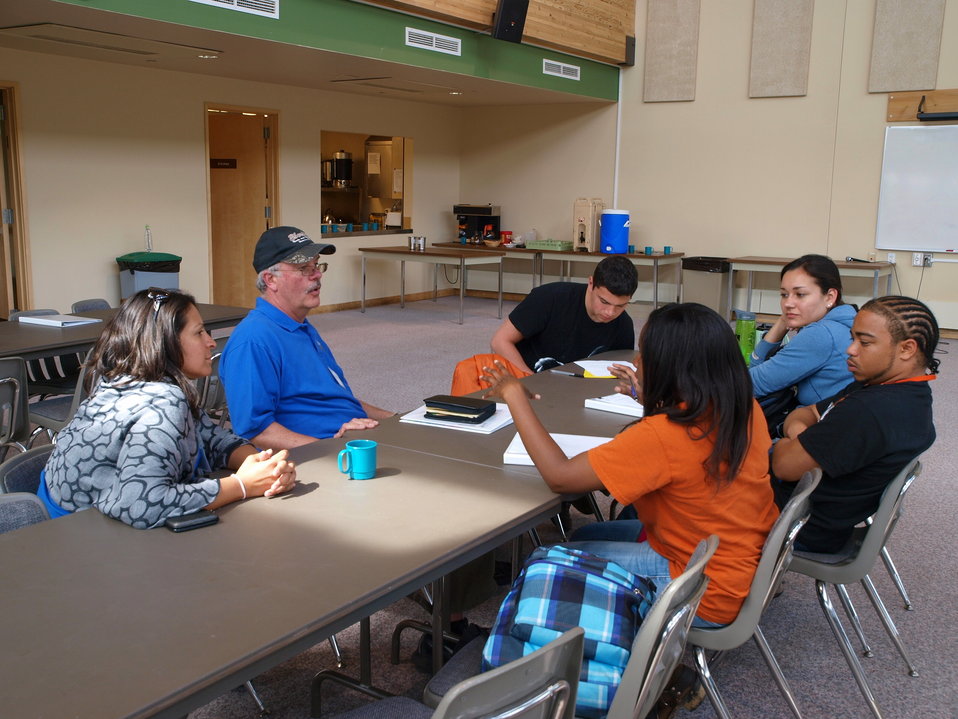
CDIP 2012 Fergus Falls

Wedge and Gisella meeting with menthes